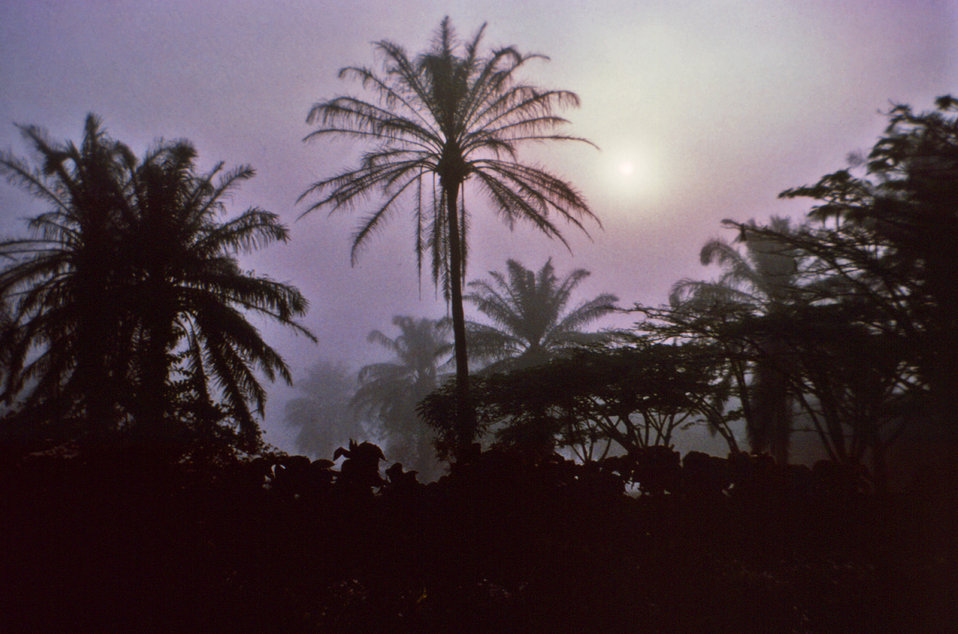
This photograph was taken near the Belgian mission hospital in Yambuku, Zaire, (now known as the Democratic Republic of the Congo) where the first Ebola outbreak started in August, 1976.